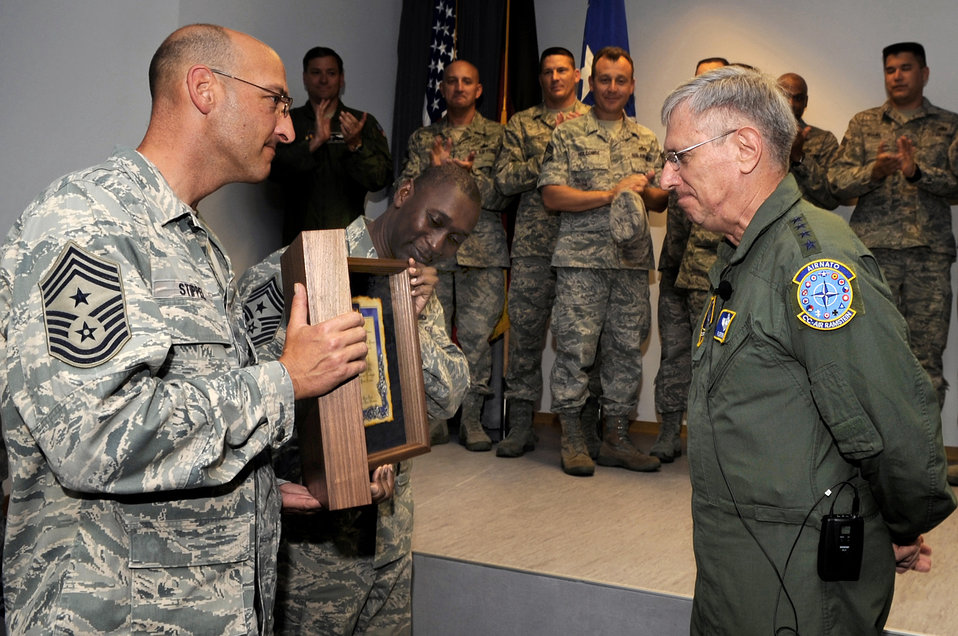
USAFE enlisted honor general with Order of the Sword

Gen. Roger A. Brady reads his official Order of the Sword invitation July 14, 2010 at the Kisling NCO Academy on Kapaun Air Station, Germany. General Brady is the U.S. Air Forces in Europe commander.